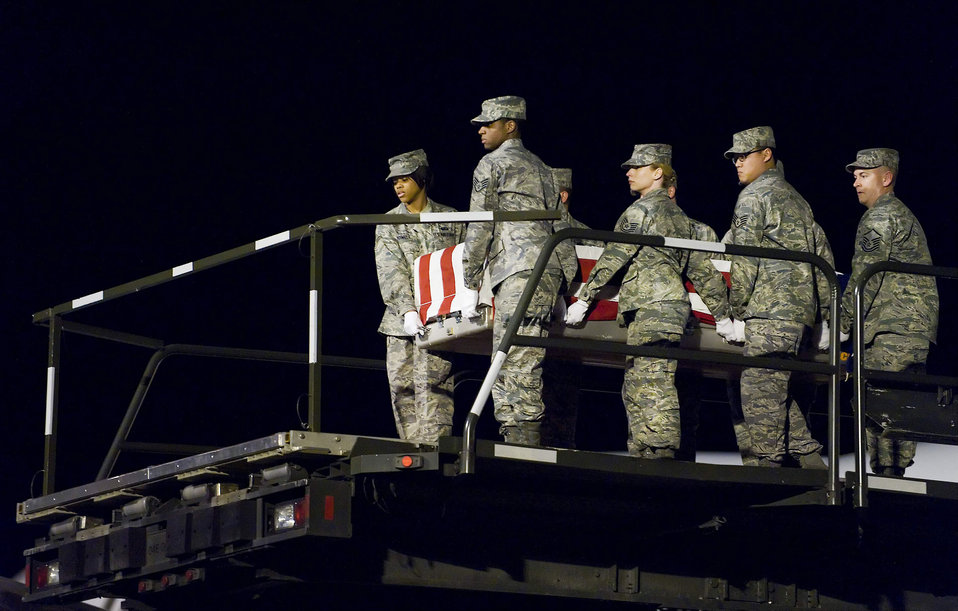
Dignified Transfer

An Air Force Mortuary Affairs Operations Center carry team transfers the remains of Air Force Staff Sgt. Phillip A. Myers, of Hopewell, Va., from an aircraft at Dover Air Force Base, Del., April 5. Sergeant Myers died April 4 near Helmand Province, Afghanistan, from wounds suffered from an improvised explosive device. He was assigned to the 48th Civil Engineer Squadron, Royal Air Force Lakenheath, United Kingdom. Sergeant Myers' family is the first to allow media to cover the dignified transfer under the new Department of Defense policy.